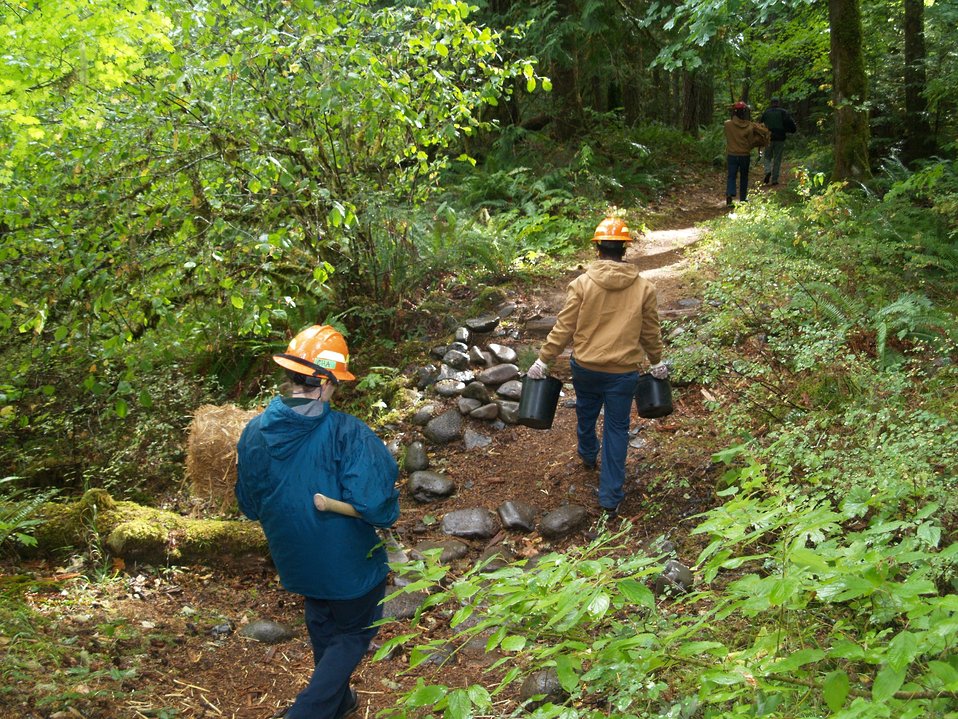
September 29, 2009. Estacada, OR. Timber Lake Job Corps Center students walk to a streamside restoration project on the Clackamas River. The project enhances the spawning areas of native salmon on the river.